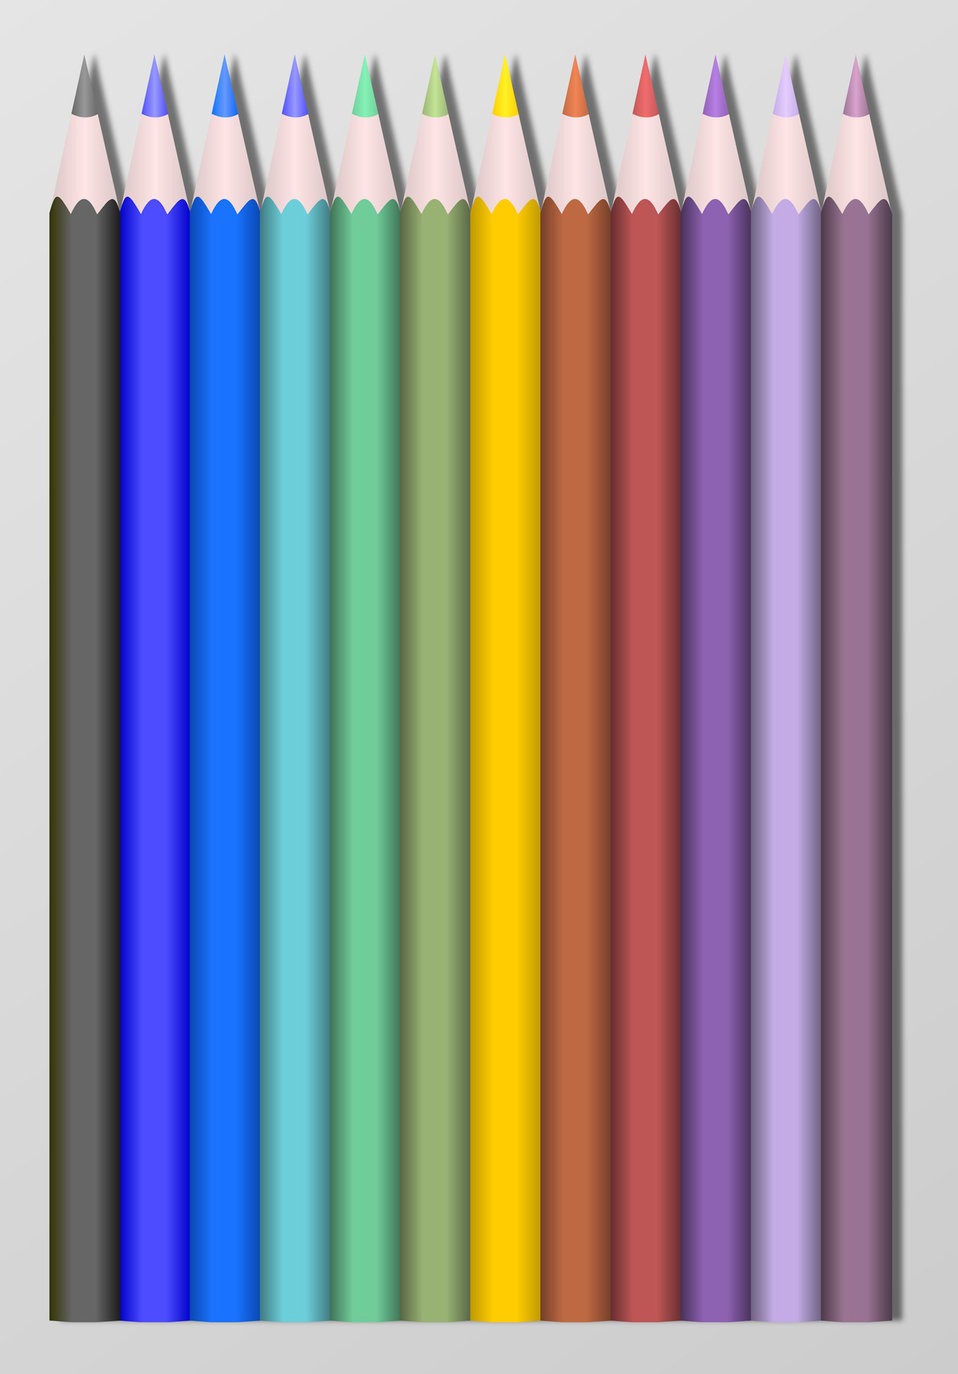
Colored pencils

A set of colored pencils, side by side..